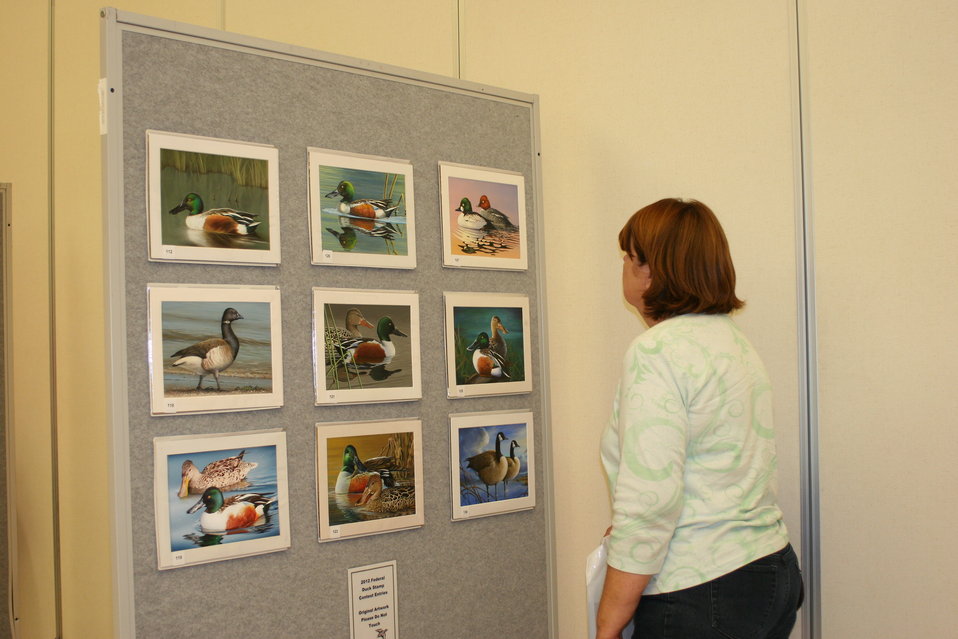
Artwork Viewing

Photo Credit: Suzanne Fellows / USFWS
The U.S. Fish & Wildlife Service sponsored the 2012 Federal Duck Stamp Art Contest September 28 and 29 in Ogden, Utah, at Weber State University. A panel of five judges was responsible for choosing the art work used to design the 2013-2014 Migratory Bird Hunting and Conservation Stamp.